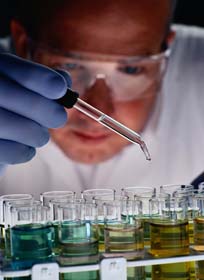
NIDA Researcher

Researchers at NIDA are working to identify new medications for treating drug addiction.